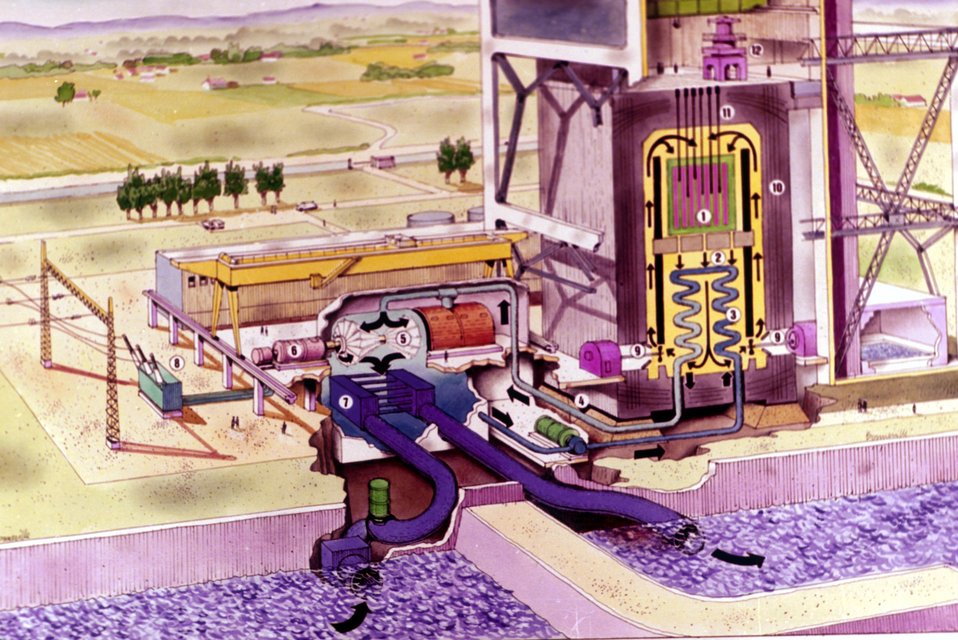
EcorchÐ d'une centrale graphite-gaz.